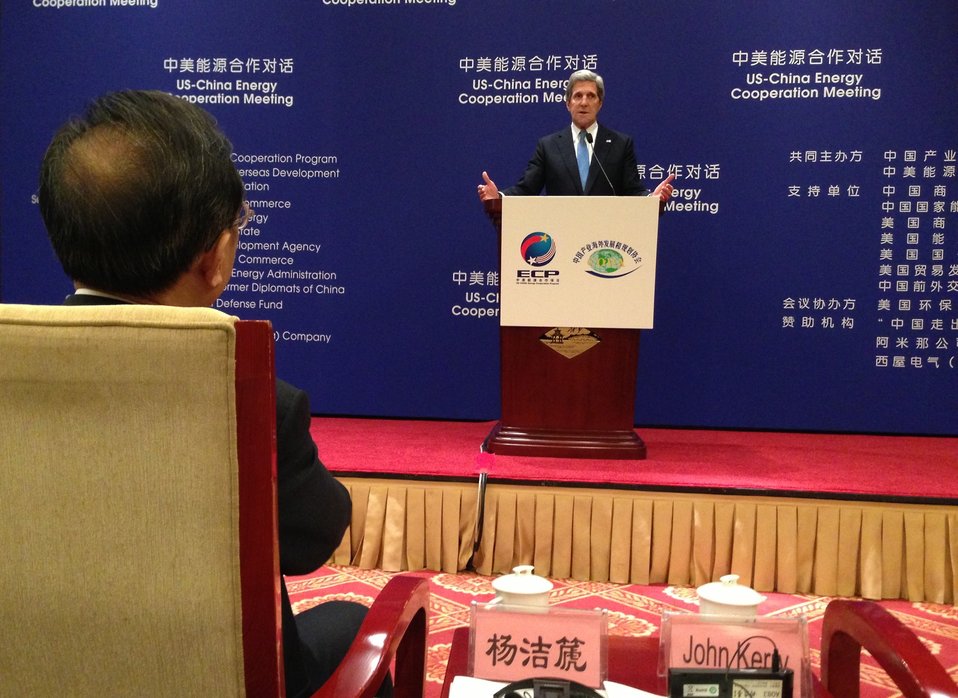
Secretary Kerry Speaks about U.S.-China Energy Cooperation

With Chinese State Councilor Yang Jiechi looking on, U.S. Secretary of State John Kerry speaks about U.S.-China energy cooperation and its economic benefits to both countries in Beijing, China, on April 13, 2013.